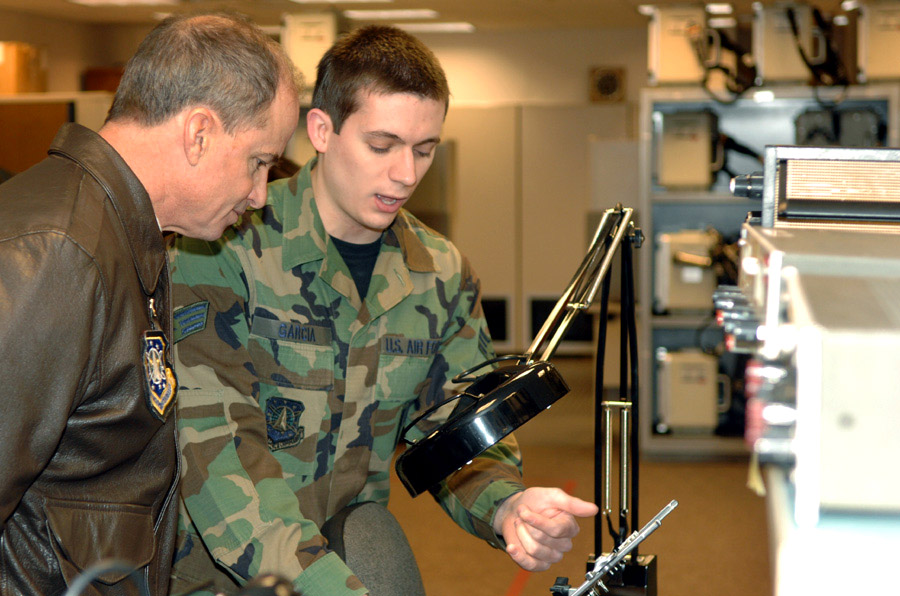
AFSPC commander: Minot in 'thick of the fight'

Gen. Kevin P. Chilton examines the work of Senior Airman Christopher Garcia Jan. 23 at Minot Air Force Base, Mont. General Chilton, the Air Force Space Command commander, visited Minot's 91st Space Wing as part of a base orientation to familiarize him with the wings now under his command. Airman Garcia is assigned to the 91st Missile Operations Squadron.